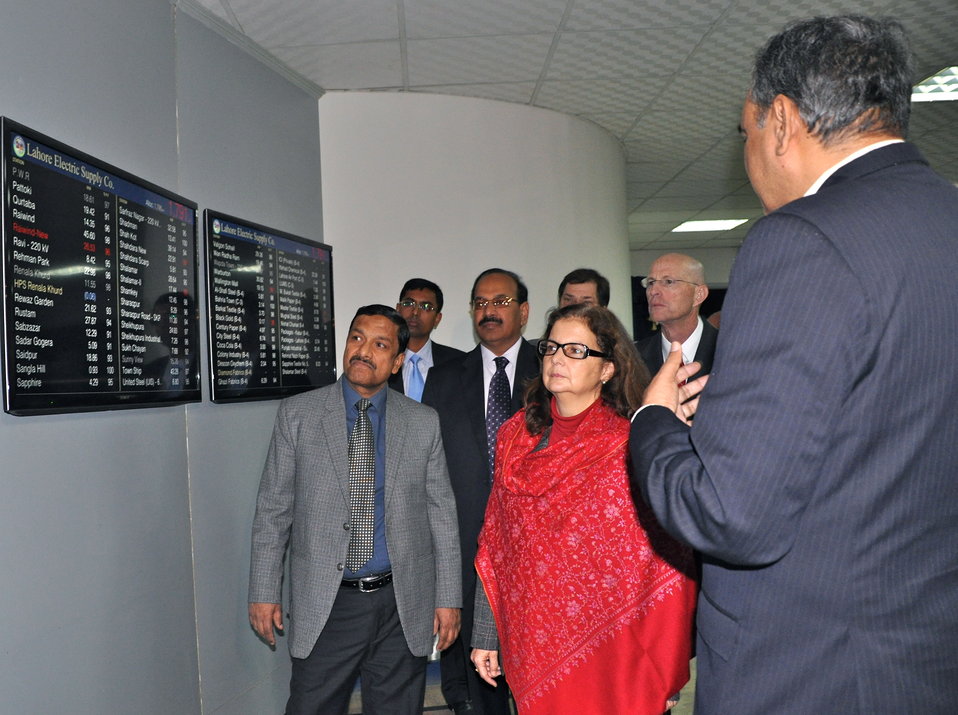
Inauguration of the Power Distribution Control Center at LESCO